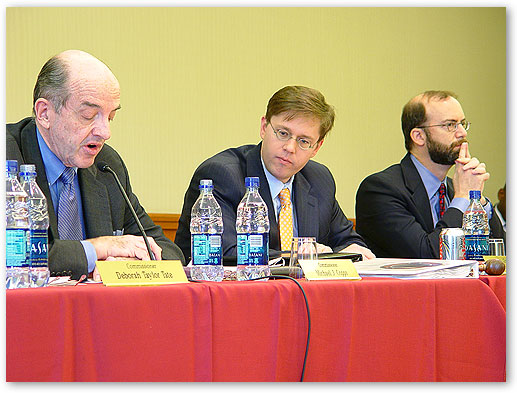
Commissioner Michael Copps, Chairman Kevin Martin, Commissioner Jonathan Adelstein.